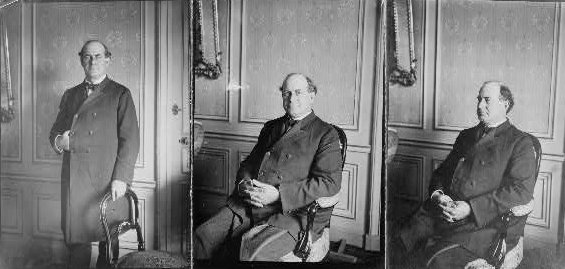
William Jennings Bryan, U.S. Secretary of State 5 March 1913 to 9 June 1915.

From hdl.loc.gov/loc.pnp/cph.3g04669